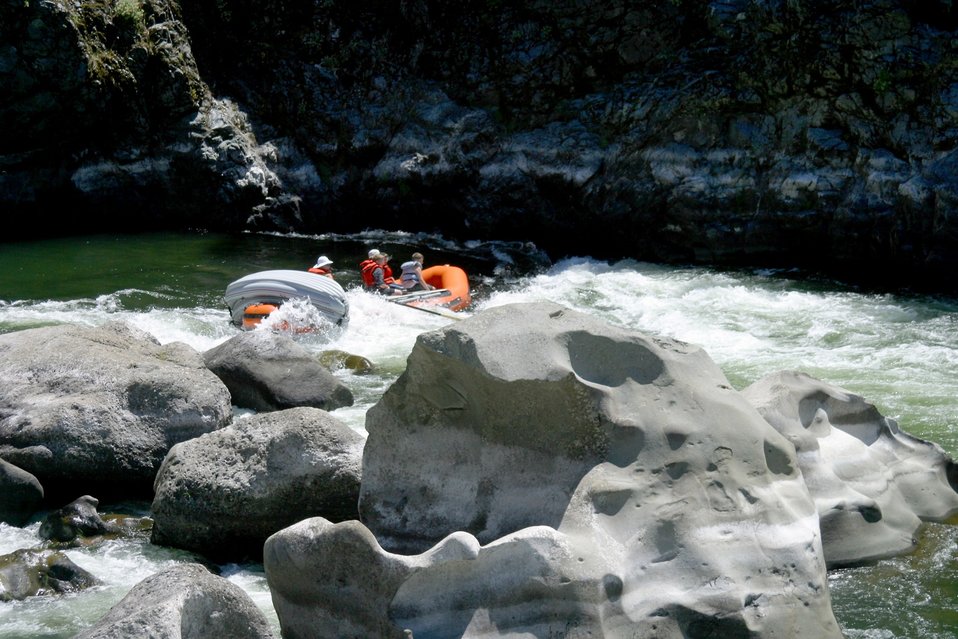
Blossom Rapids.